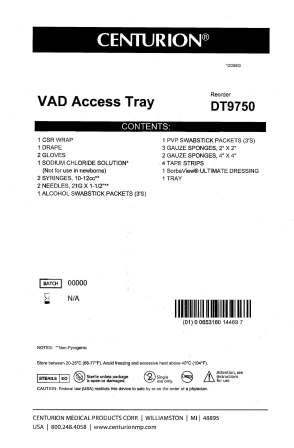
RECALLED - Convenience kits which contain bacteriostatic sodium chloride solution by American Regent

April 1, 2011 - Product Recall - Centurion Medical Products Initiates Voluntary Recall of Customized Convenience Kits (including select Central Venous Catheter, PICC Insertion, and VAD Trays) that contain American Regent’s Bacteriostatic Sodium Chloride Injection, USP, 0.9% 30 mL Multiple Dose Vials.